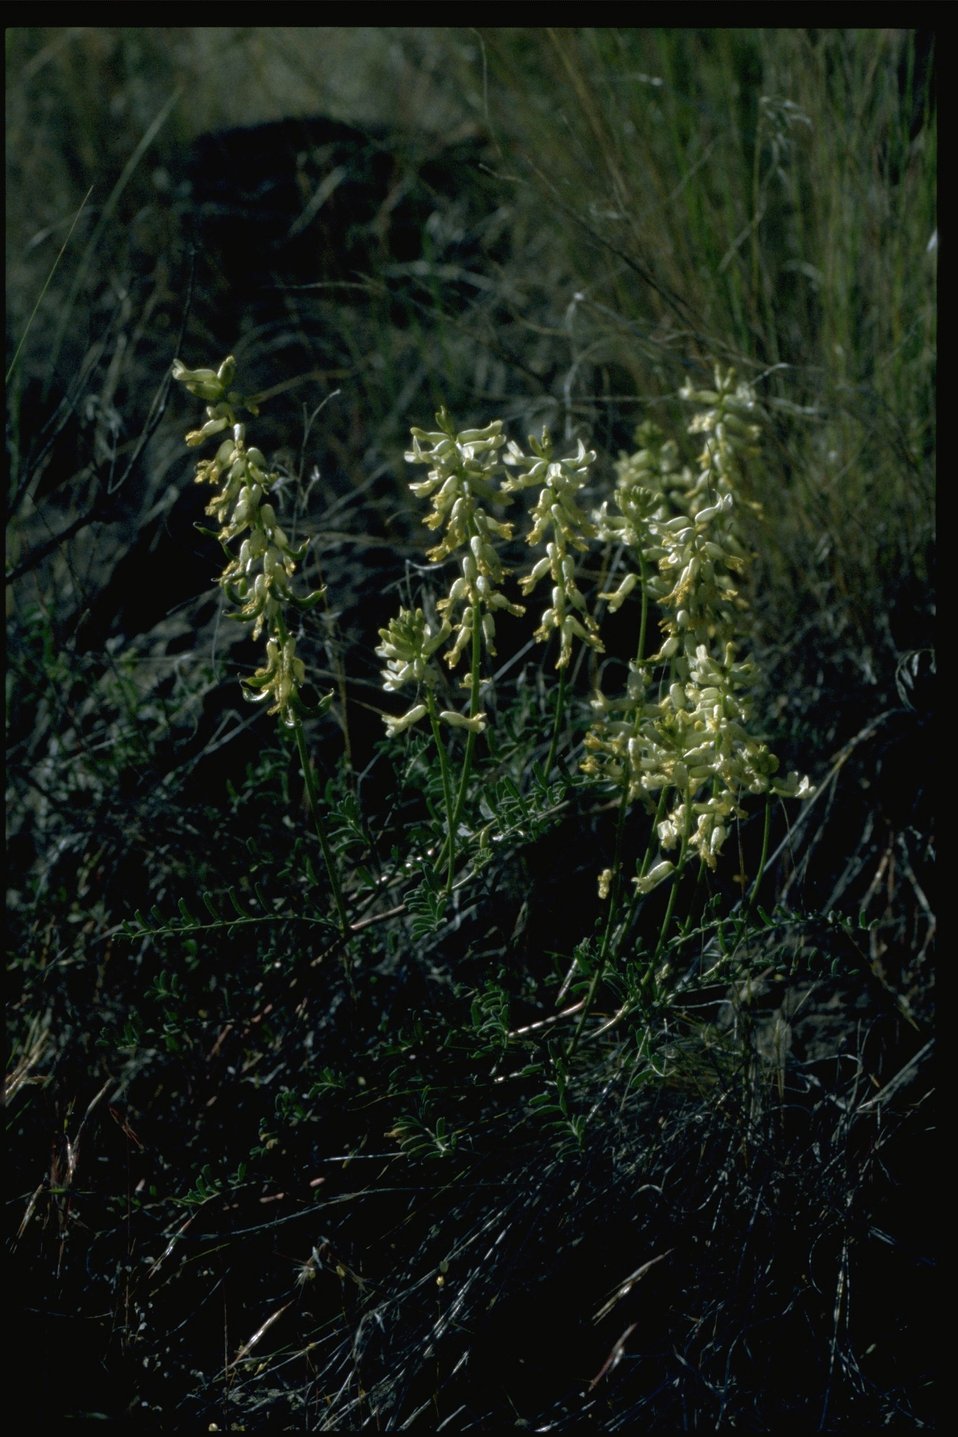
Farshot of curvepod milkvetch (Astragalus curvicarpus).